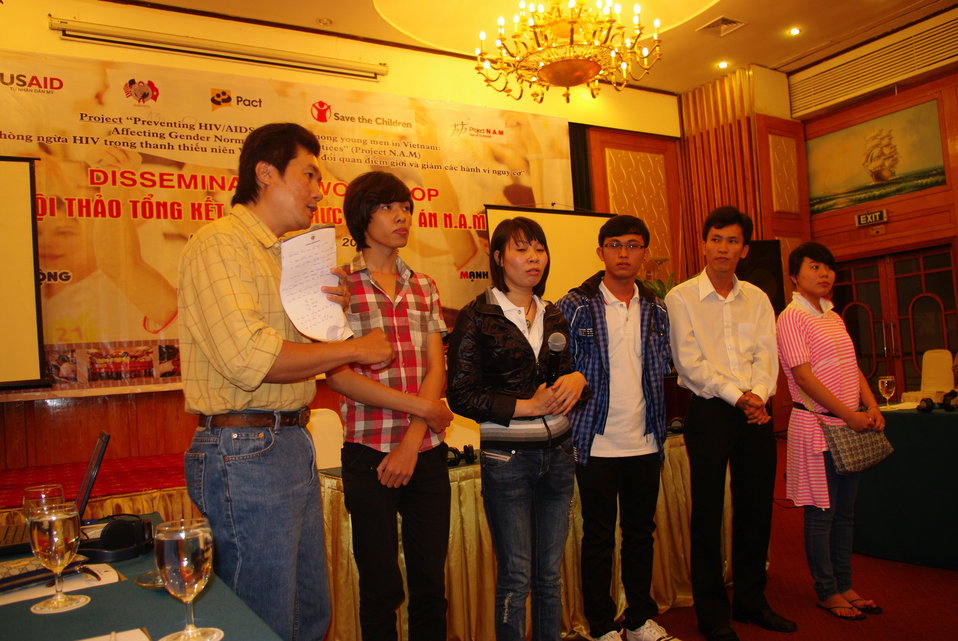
USAID Supports HIV Awareness among Street Youth and Young Men